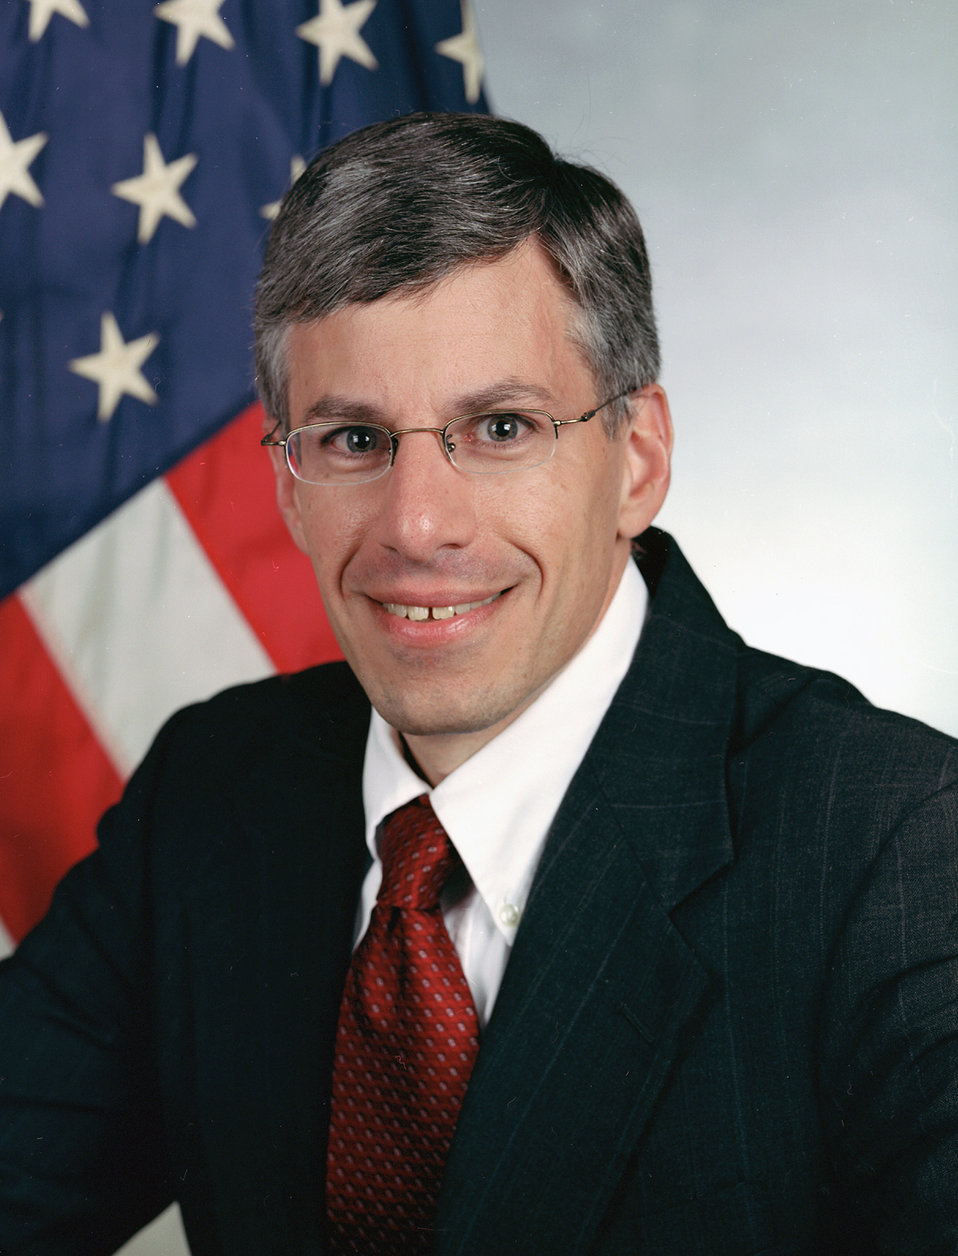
Former NIST Director William A. Jeffrey

Former (2005-2007) NIST Director William A. Jeffrey